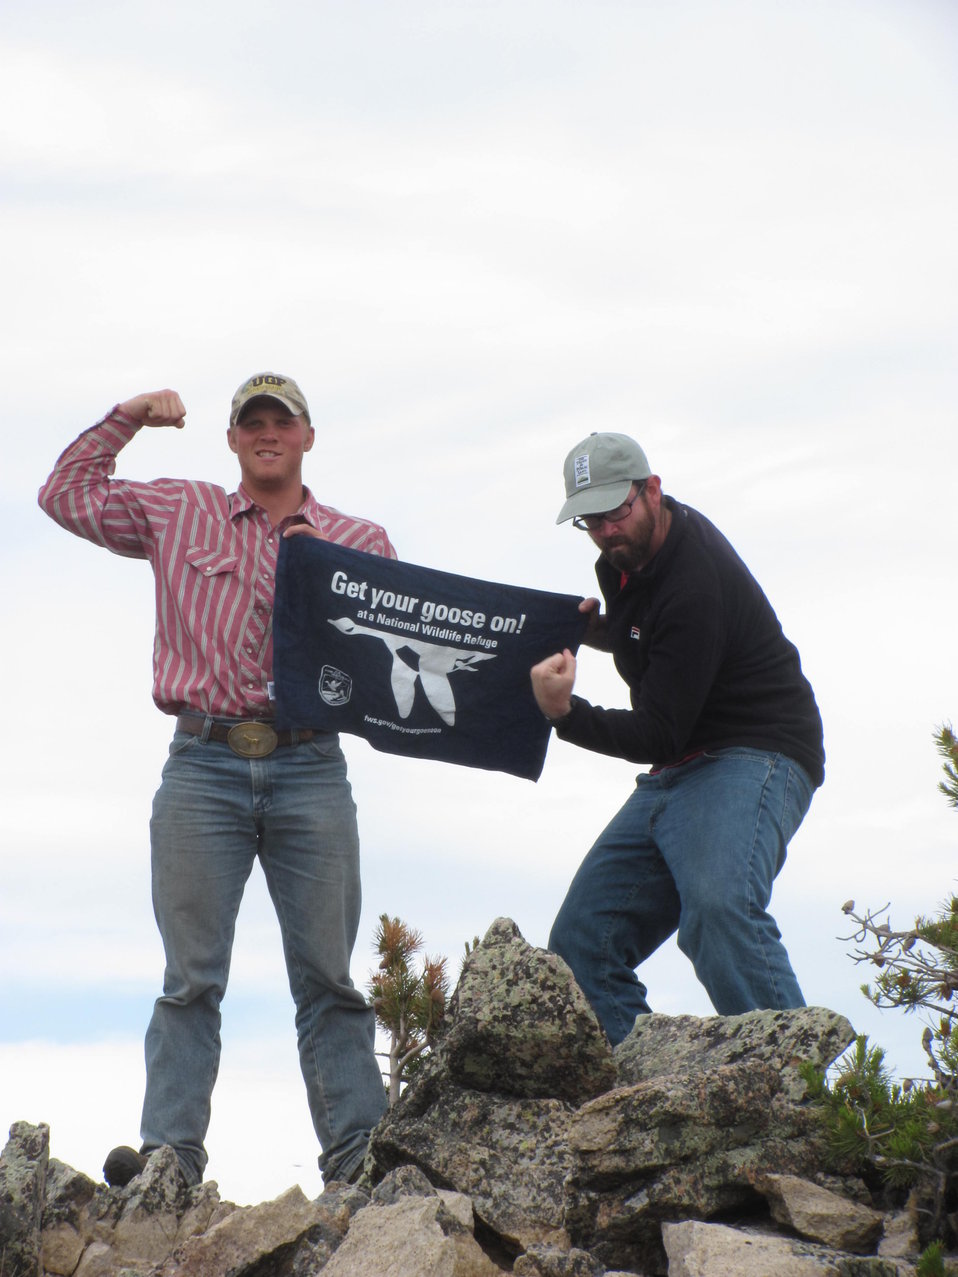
Get Your Goose On!

The Benton Lake National Wildlife Refuge traveling strike team Gets Their Goose On!